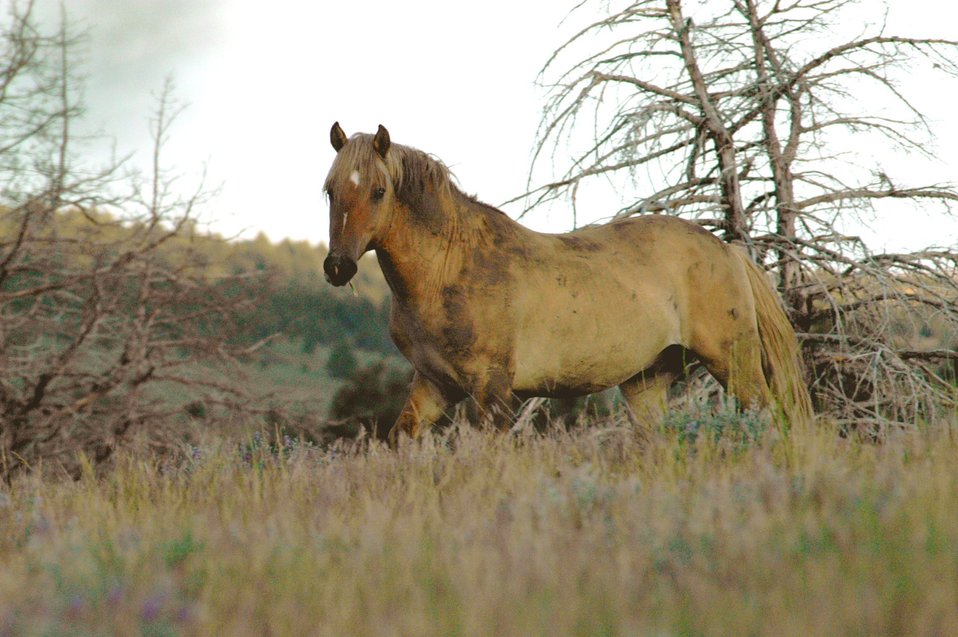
Kiger horses roam the plateaus of the Kiger Wildhorse Herd Management Area near Steens Mountain in Southeastern Oregon.